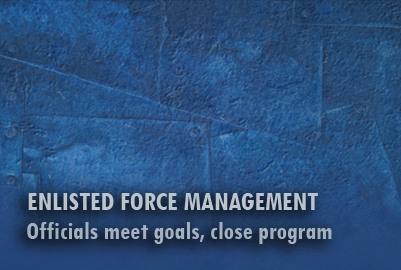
Enlisted Force Management